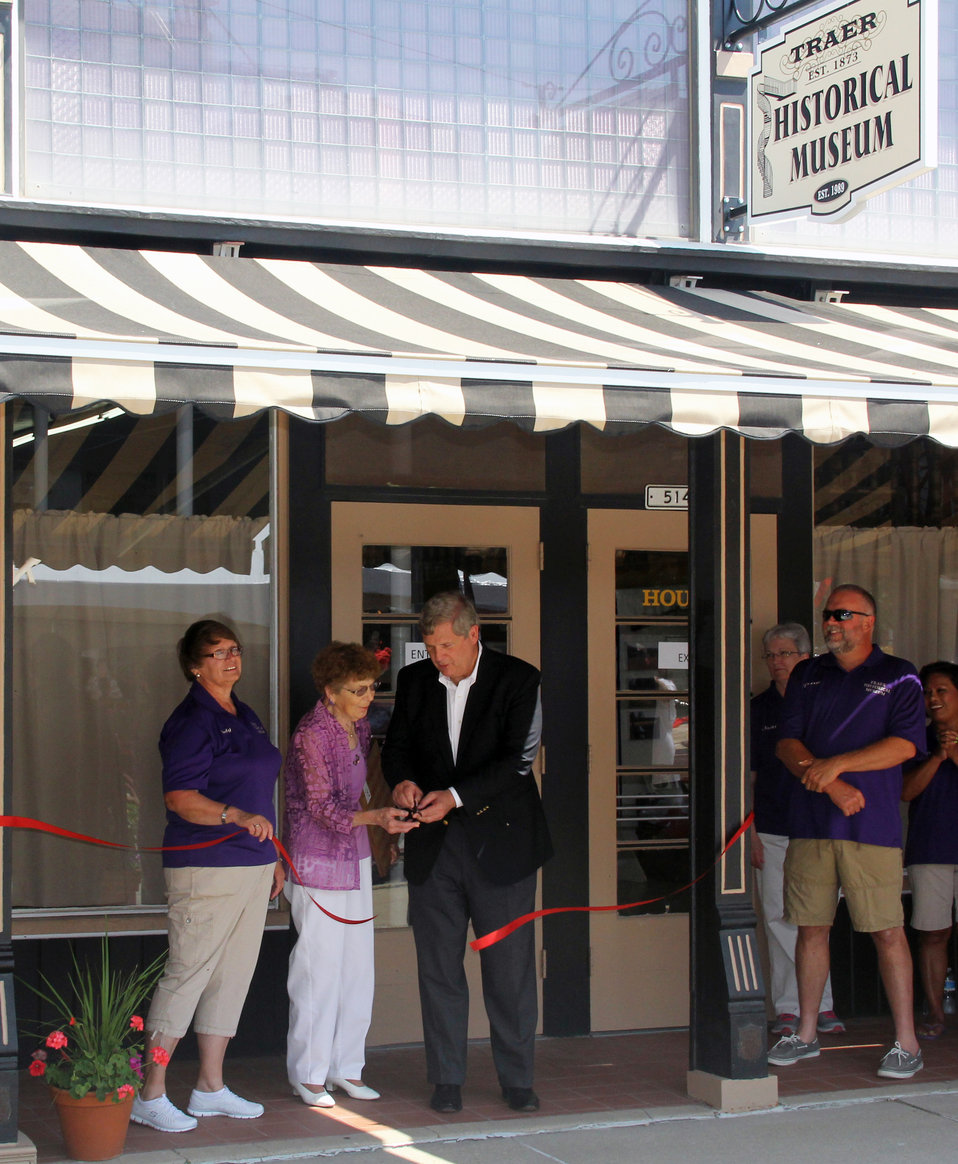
Agriculture Secretary Tom Vilsack cutting the ribbon at the opening ceremony for the Traer Historical Museum exhibit honoring the longest serving cabinet member, former U.S. Agriculture Secretary James 'Tama Jim' Wilson. Wilson was Agriculture Secretary from 1897-1913 under Presidents McKinley, Roosevelt and Taft, at Traer Historical Museum, Traer, Iowa Traer, IA, on Saturday, Jul. 20, 2013.